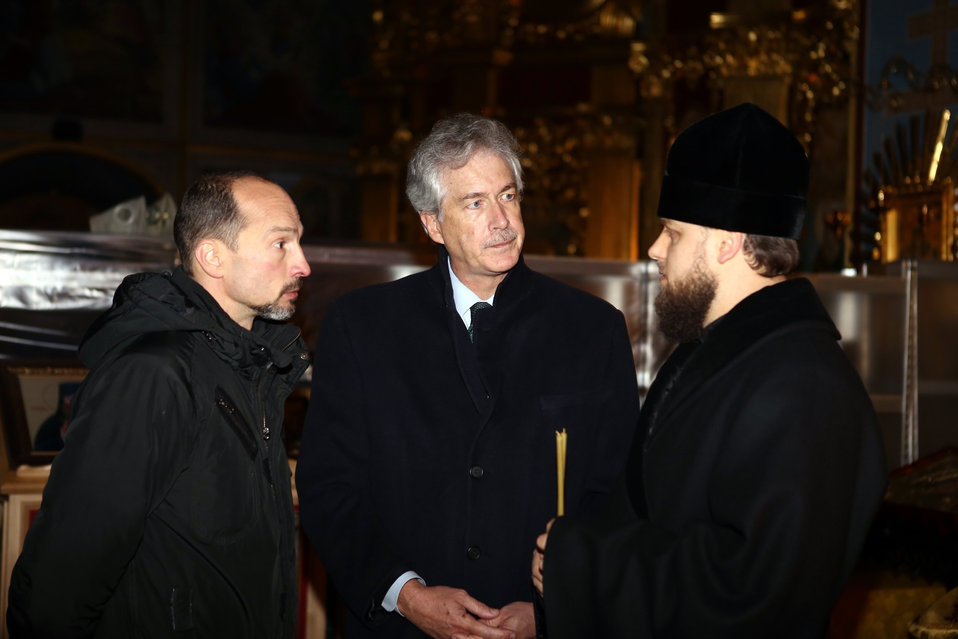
Deputy Secretary Burns Meets With Religious Leaders at St. Michael's Cathedral

Deputy Secretary of State Bill Burns meets with Maidan Medical Service, AutoMaidan, Hromadsky Sector and religious leaders at St. Michael's Cathedral in Kyiv, Ukraine, on February 25, 2014.